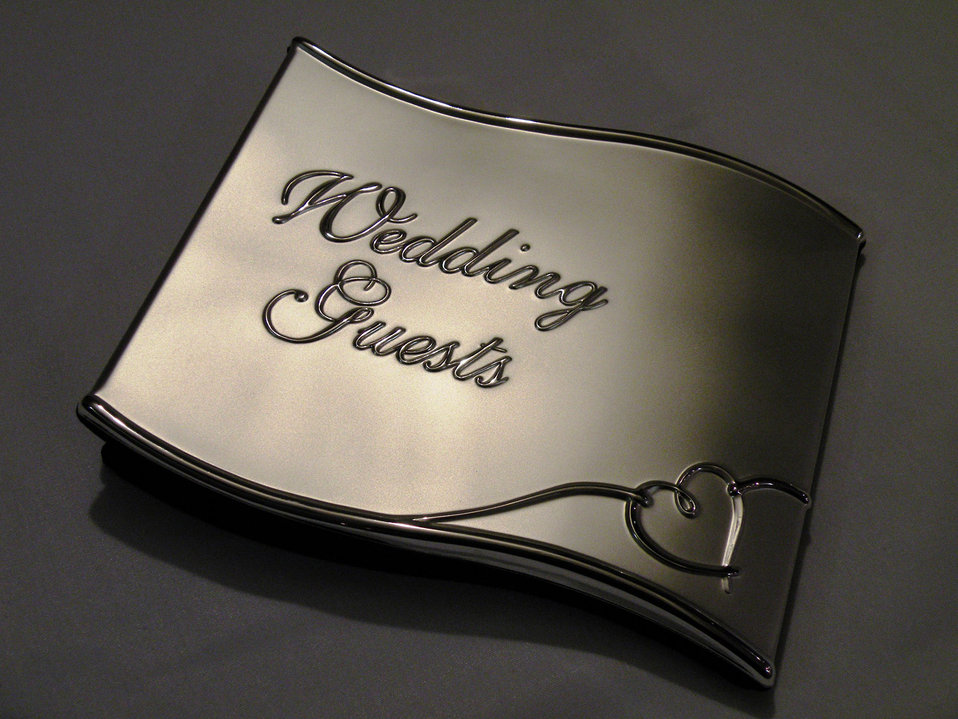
Wedding guests

The guest book.